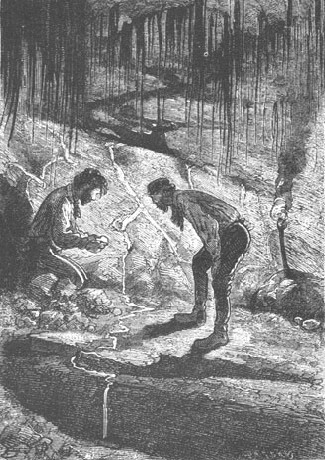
An illustration from Jules Verne's novel 'The Mysterious Island' (1873-74) drawn by Jules Férat. Polski: Ilustracja powieści Juliusza Verne'a 'Tajemnicza wyspa' (tytuł przekładany także jako: Wyspa tajemnicza, 1873-74) autorstwa Julesa Férata. Français : Jules Verne: 'L’Île mystérieuse' (1873-74), dessins par Jules Férat. Orginal description from the book: Français : Une petite saignée…